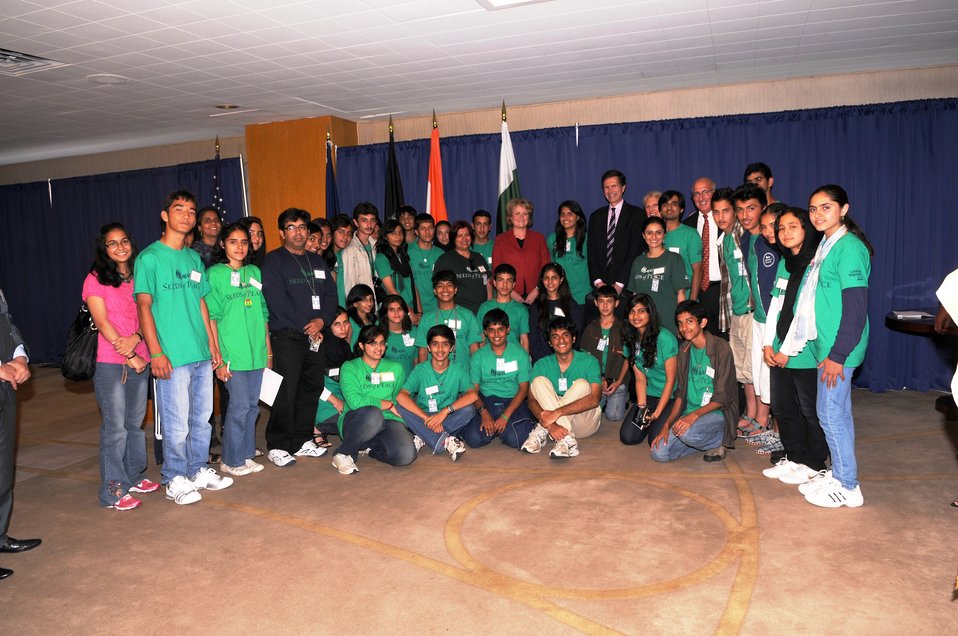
Under Secretary McHale and Assistant Secretary Blake With South Asian Seeds of Peace Participants

U.S. Under Secretary of State for Public Diplomacy and Public Affairs Judith McHale (center) and U.S. Assistant Secretary for South and Central Asian Affairs (center-right) pose for a photo with South Asian participants of the Seeds of Pace program at the U.S. Department of State in Washington, D.C., on July 14, 2010.